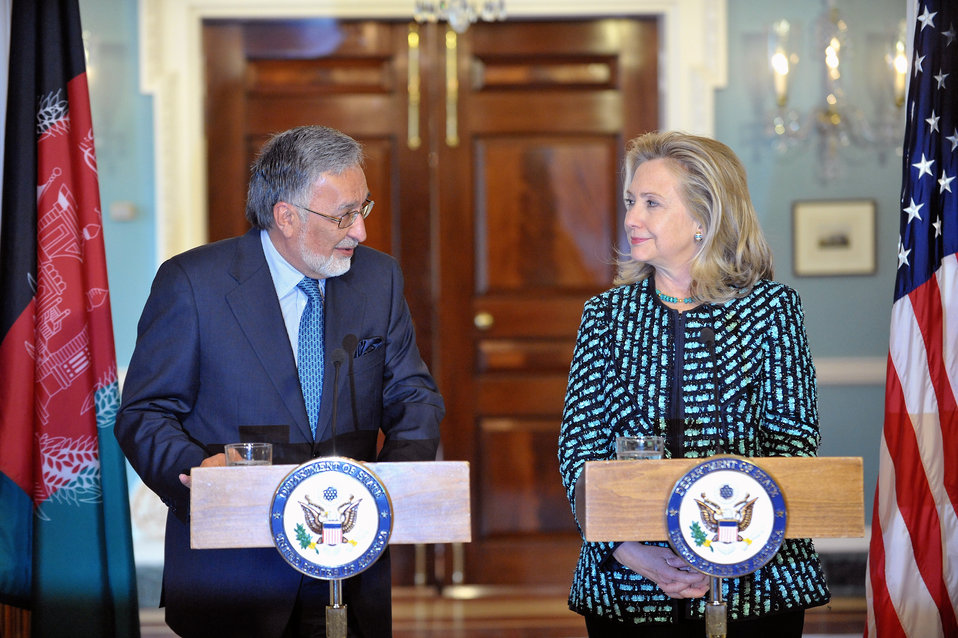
Secretary Clinton Delivers Remarks With Afghanistan Foreign Minister Rassoul

U.S. Secretary of State Hillary Rodham Clinton delivers remarks with Afghanistan Foreign Minister Zalmai Rassoul at the Department of State in Washington, D.C. on March 21, 2012.